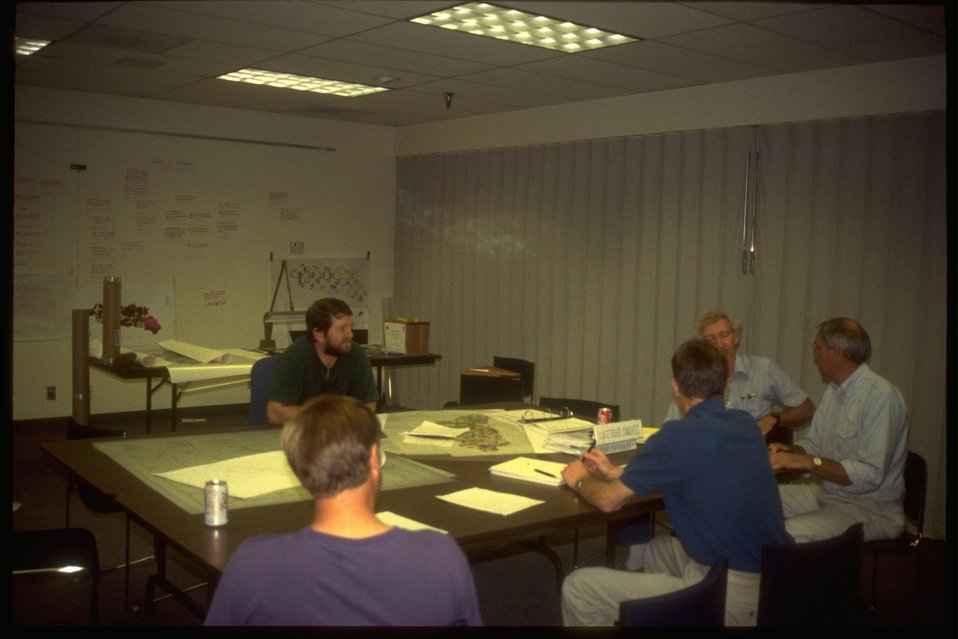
Interdisciplinary team meeting.